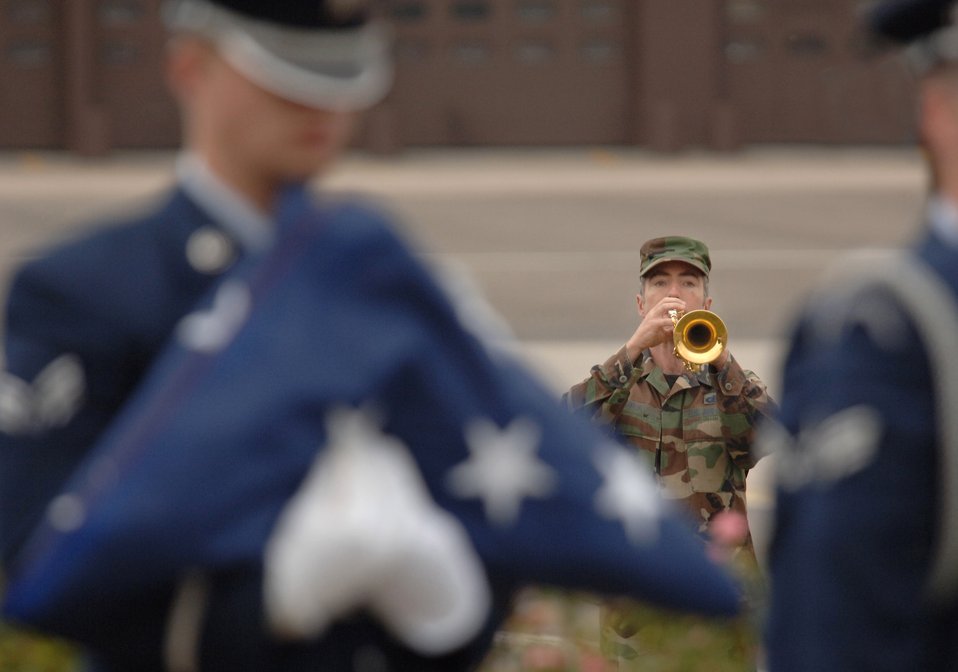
Ramstein Airmen observe Sept. 11

Master Sgt. Andy Held plays